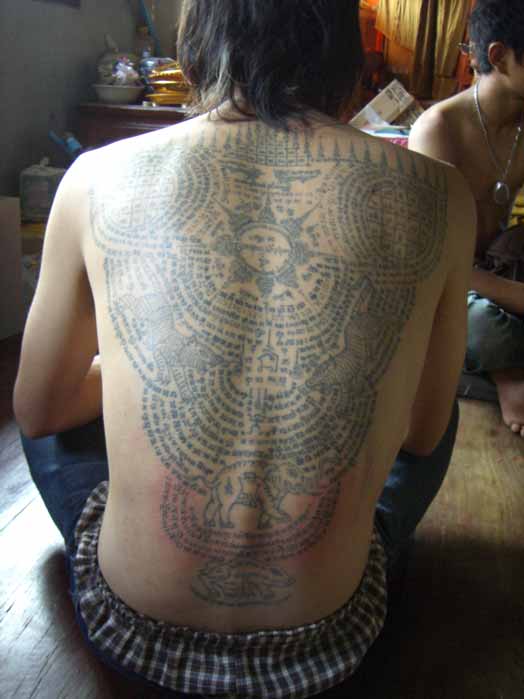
Devotee of Wat Bang Pra covered in Yant Tattoos fotographer; Spencer Littlewood